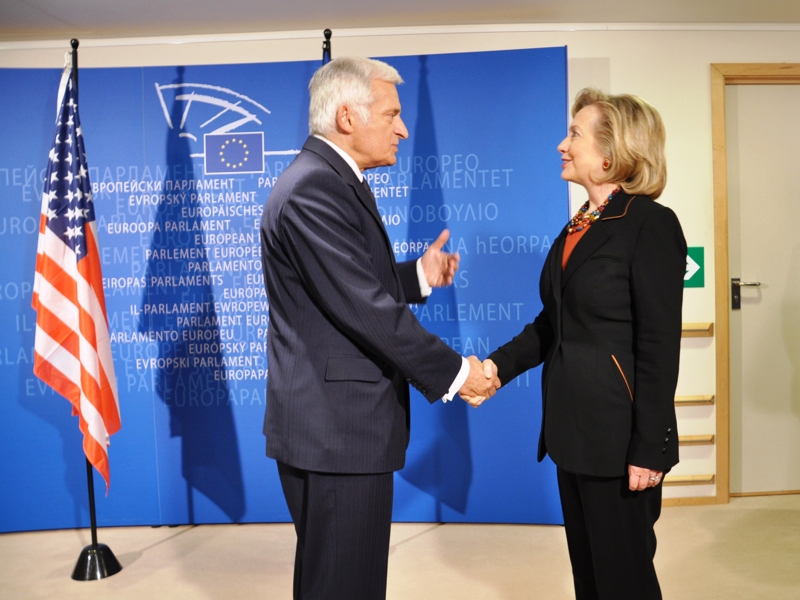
Secretary Clinton Meets With European Parliament President Buzek

U.S. Secretary of State Hillary Rodham Clinton meets with President of the European Parliament Jerzy Buzek in the European Parliament building in Brussels, Belgium, on October 14, 2010.